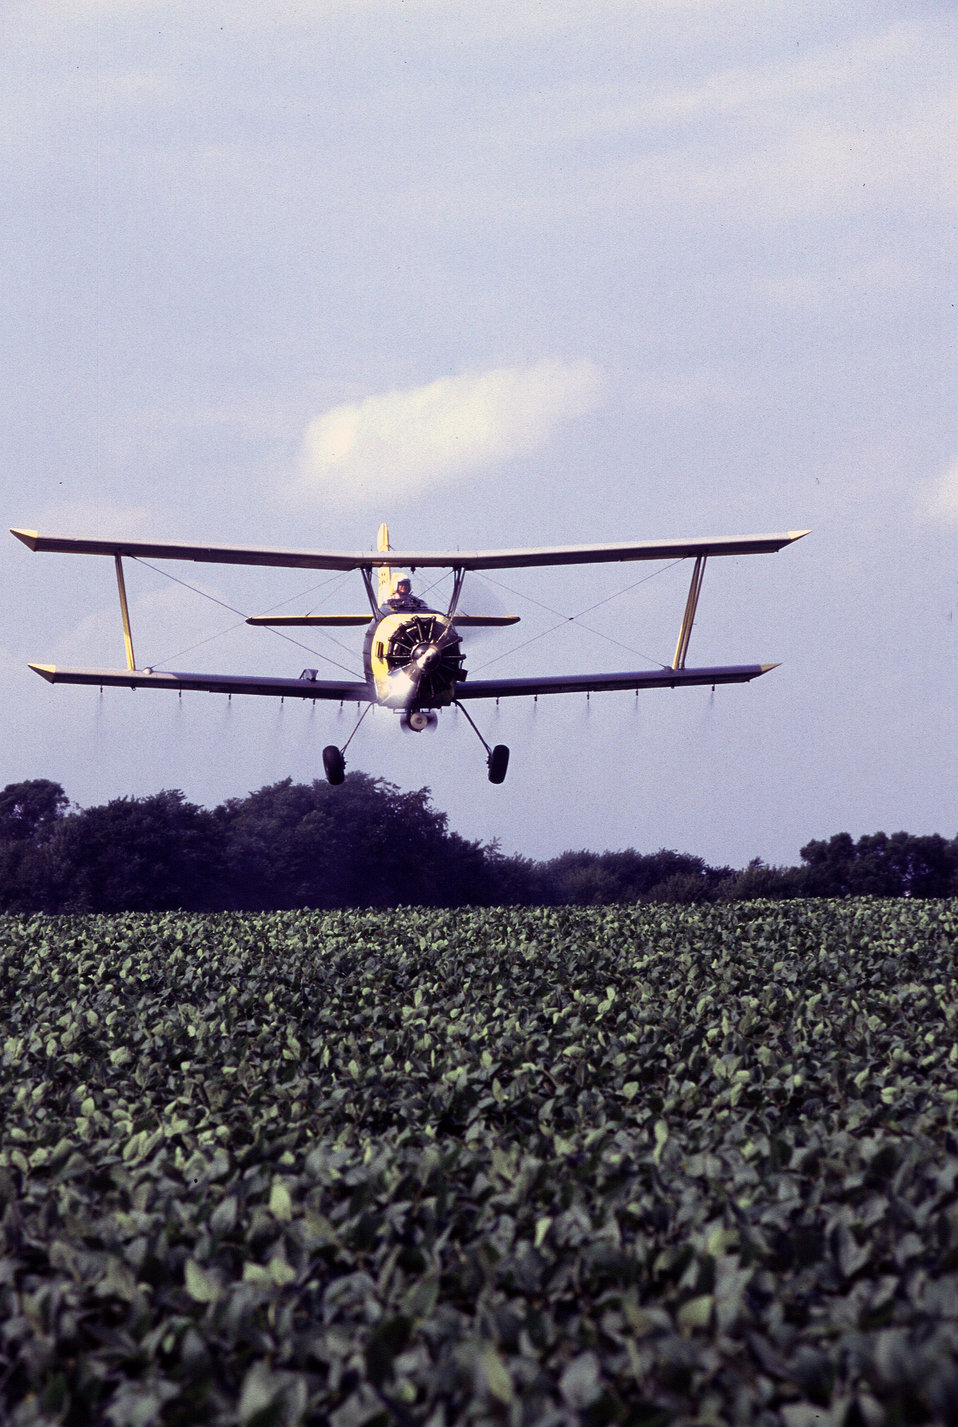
Grower Joe Zumwalt applies low-insecticide bait from the air that targets against western corn rootworms feeding on and laying eggs in these soybeans near Sheldon, IL.